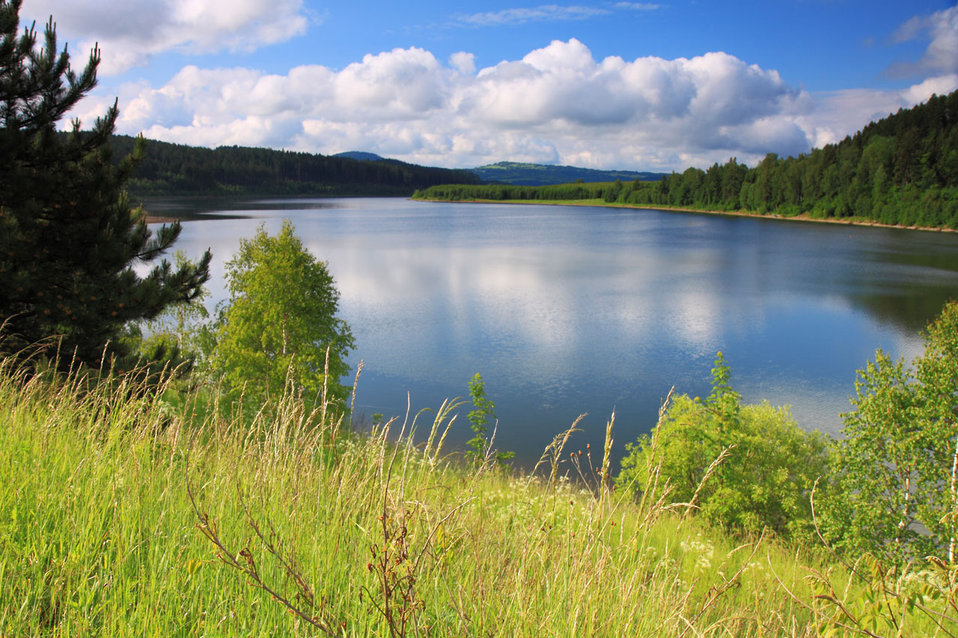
Landscape with lake

Natural landscape with lake.